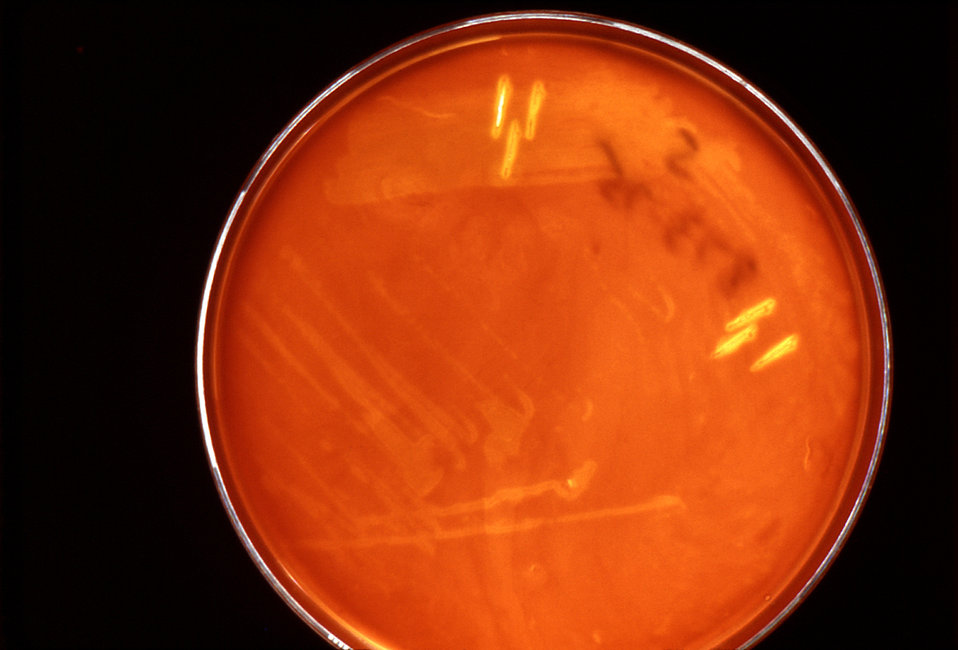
This image depicted a Petri dish filled with heart infusion agar medium containing 5% defibrinated rabbit blood, i.e., blood agar plate (BAP). After having been inoculated, using both a streak and stab technique with culture of Streptococcus anginosus bacteria, a member of the Gram-positive viridans group of streptococci (VGS), the BAP was incubated in a carbon dioxide enriched atmosphere at 35oC for 24 hours. The culture grew bacterial colonies. In this view, one can see numbers of growing colonies surrounded by what is known as "wide zone alpha hemolytic" (WZα) color changes. Characteristics of WZα reactivity are described as, "the area immediately adjacent to the colony has some red blood cells (RBCs), but an area outside of that may be completely, or nearly completely, cleared of RBCs. Therefore, there is no reactive zones where "complete" RBC hemolysis had occurred, as is the case in beta-hemolytic reactions, hence the Wide Zone "alpha" terminology.